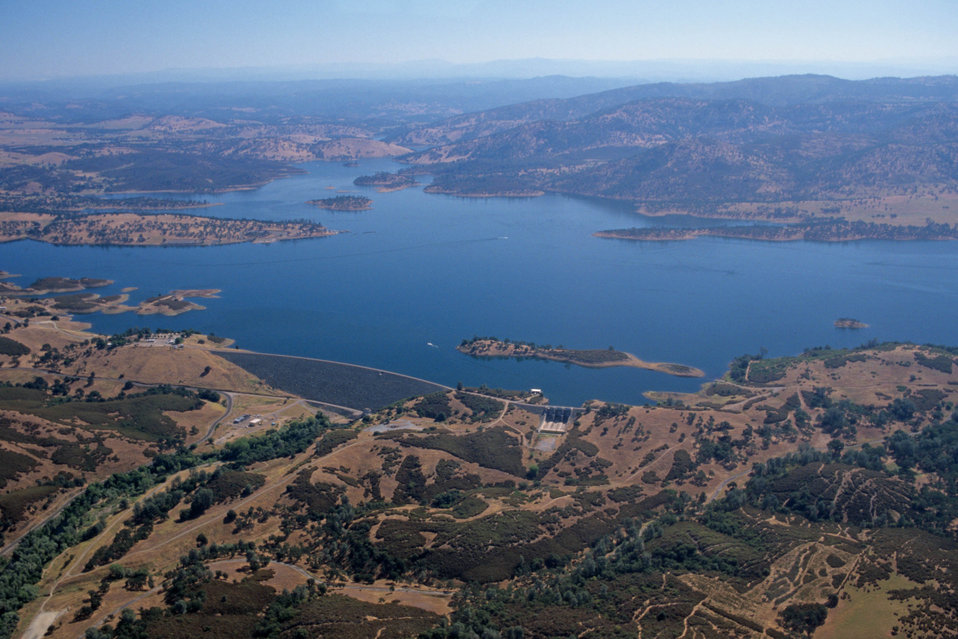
More water at New Hogan in 2011

110328-A-ZZ999-001 – An aerial view of New Hogan Lake, a U.S. Army Corps of Engineers Sacramento District park and recreation area in Valley Springs, Calif., Mar. 28, 2011, shows the lake at a much higher capacity than it is today. This winter’s unseasonably dry weather has caused the lake to hit record low levels.